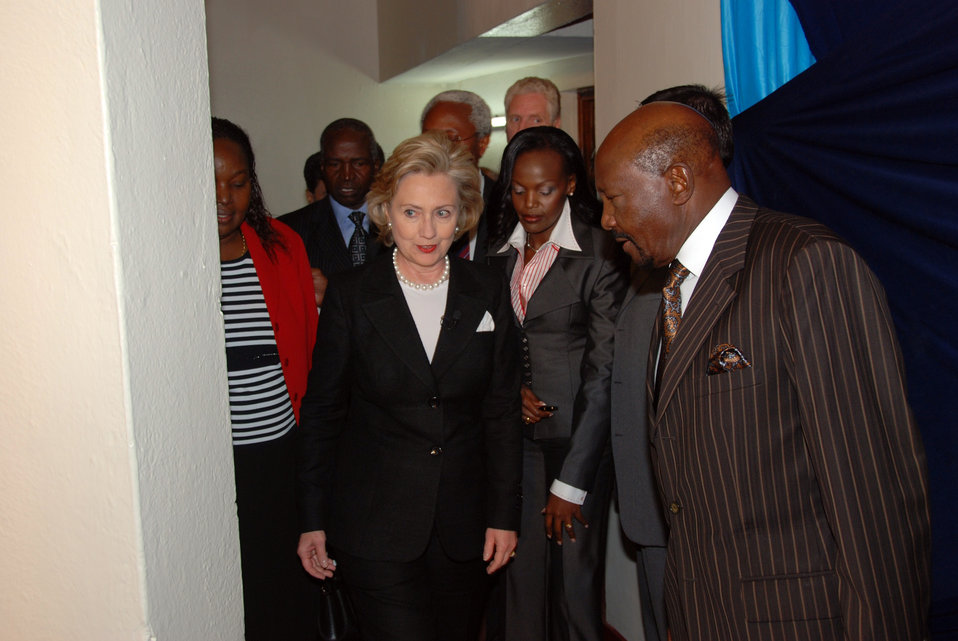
Secretary Clinton Participates in Town Hall Meeting

U.S. Secretary of State Hillary Rodham Clinton appears prior to a town hall meeting at the University of Nairobi in Nairobi, Kenya August 6, 2009.